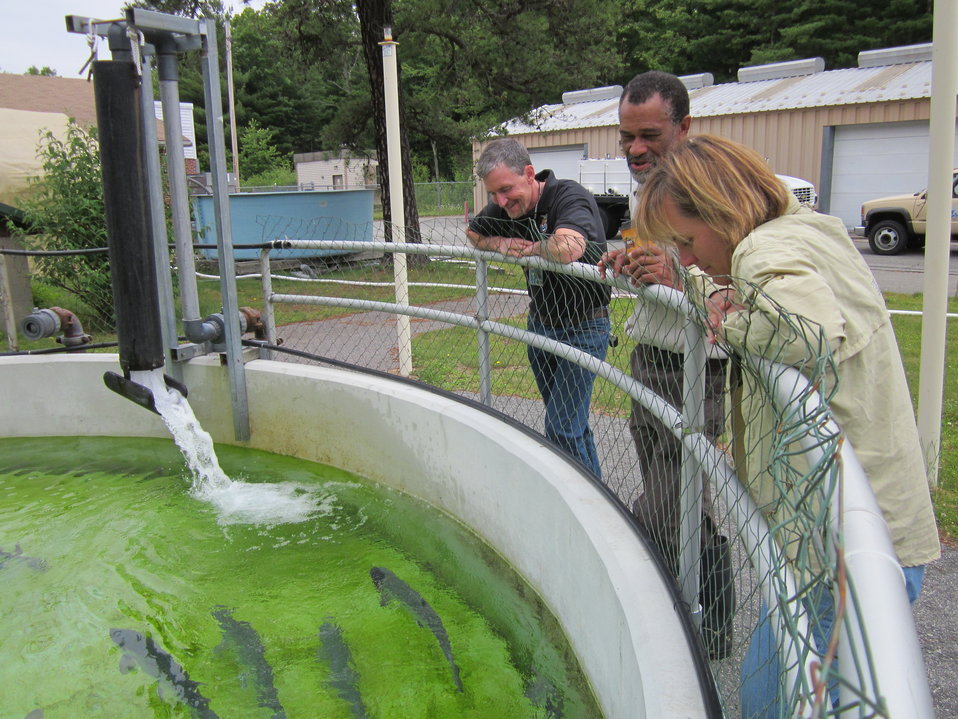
Atlantic salmon viewing pool

North Attleboro, MA, June 2012: Bill Archambault, Deputy Assistant Regional Director for Fisheries (left), North Attleboro National Fish Hatchery Larry Lofton, and Deputy Regional Director Deborah Rocque peer into a viewing pool with Atlantic salmon at North Attleboro National Fish Hatchery.